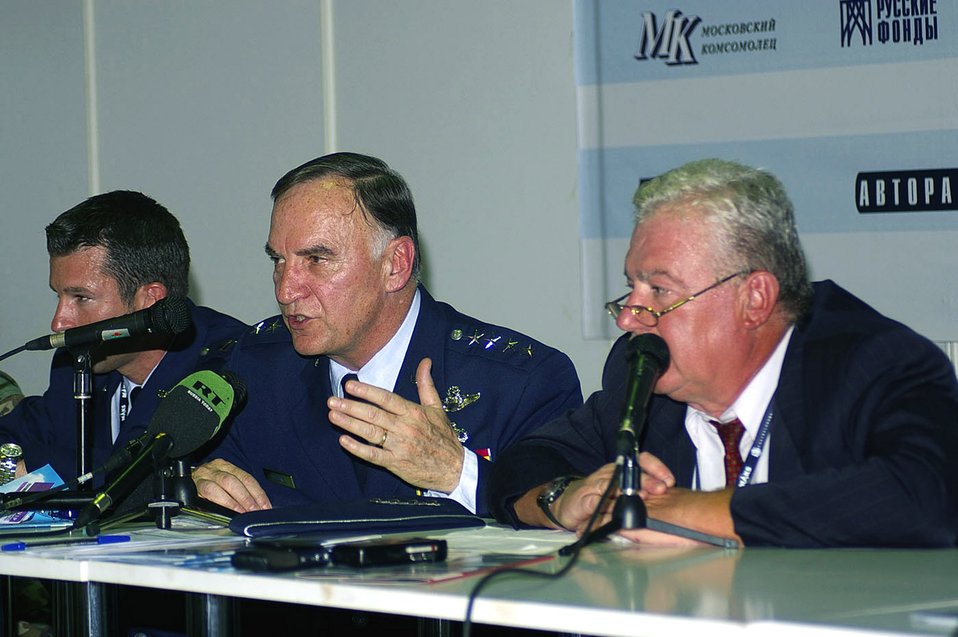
Air Force helps foster American, Russian relations

Gen. William T. Hobbins (center) talks to media during a press conference Aug. 21 at the Moscow International Air Show at Ramenskoye Airfield in Zhukovsky, Russia. Capt. John Morash (left) helps deal with queries as Victor Polishnuk prepares to translate questions and answers.